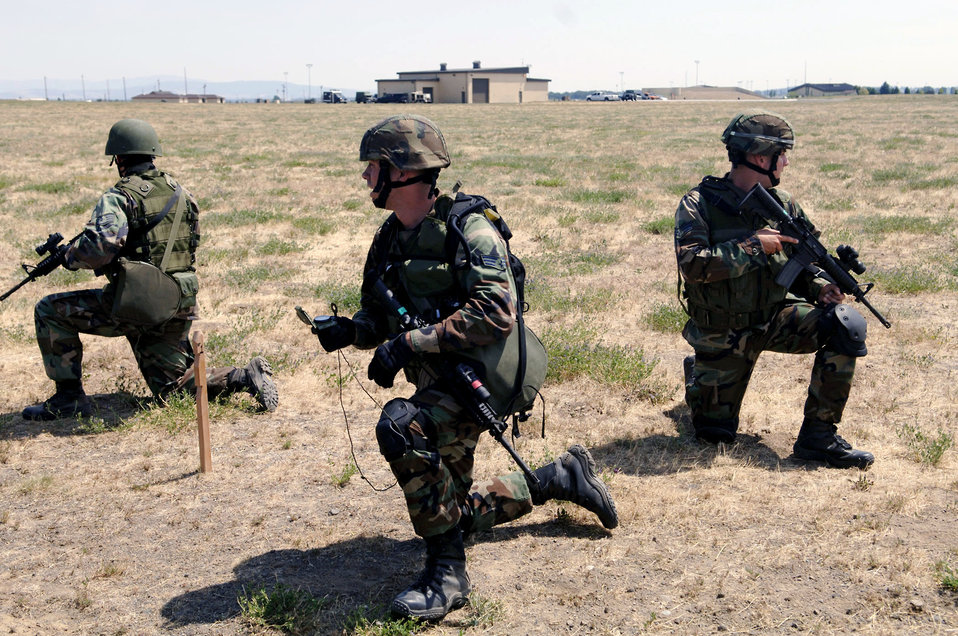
Security forces team trains for Rodeo

Staff Sgt. Levi Wilson, Senior Airman Lonnie Bell and Senior Airman David Jones stop at a checkpoint while running a practice training course July 13 at Fairchld Air Force Base, Wash. The three-Airmen team is from the 92nd Security Forces Squadron, and is training for the Air Mobility Command Rodeo 2007 at McChord AFB, Wash., at the end of July.